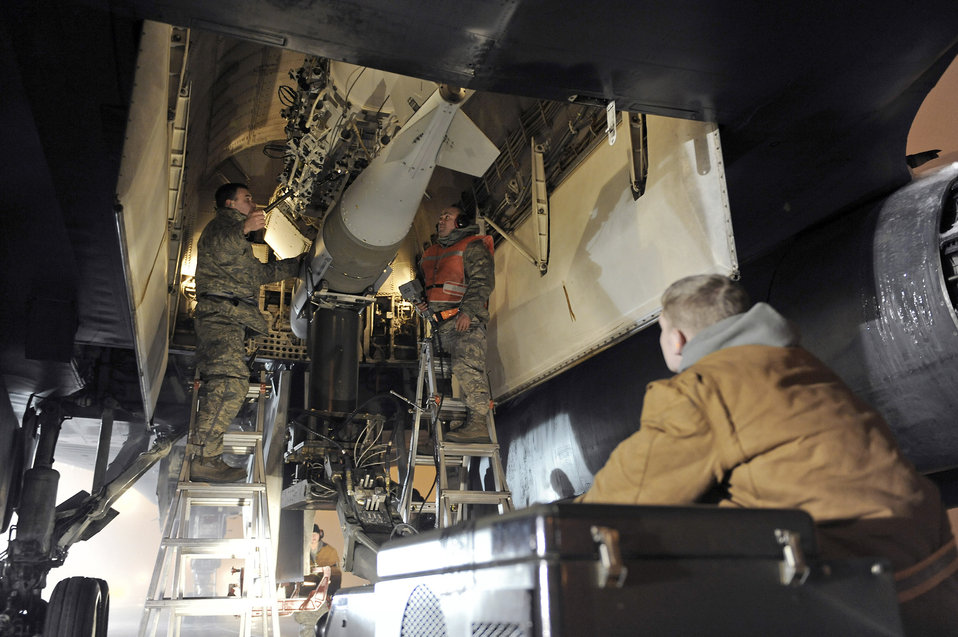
Preparing B-1B for mission

Airmen from the 28th Aircraft Maintenance Squadron load a two-thousand-pound bomb into a B-1B Lancer March 27, 2011, at Ellsworth Air Force Base, S.D., in preparation for a mission in support of Operation Odyssey Dawn.